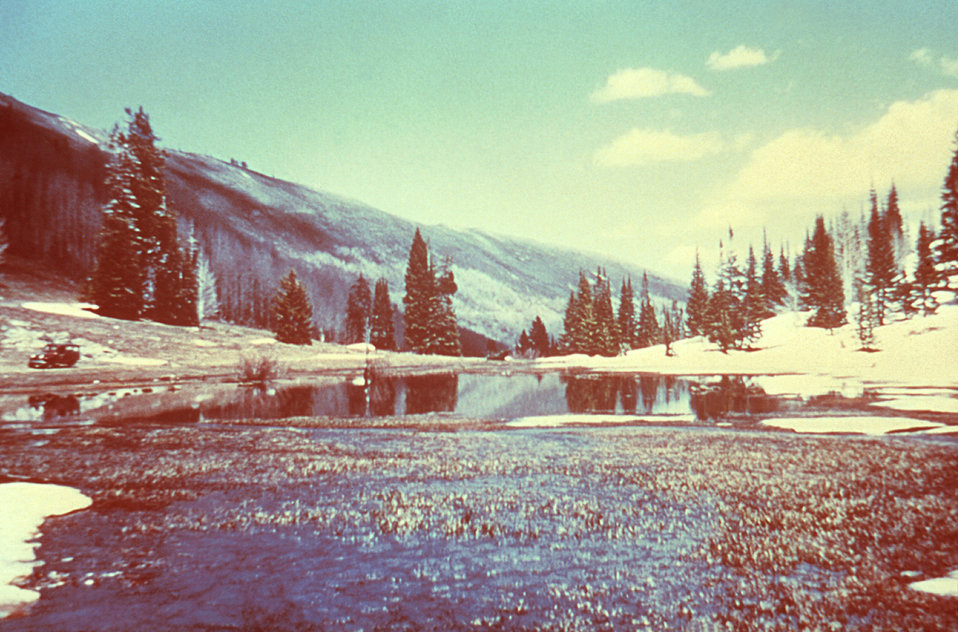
This 1981 photograph depicted a snow melt region where collected water was being investigated for the presence of adult and larval Aedes sp. mosquitoes. Aedes sp. are known vectors responsible for the transmission of Dengue fever to humans.